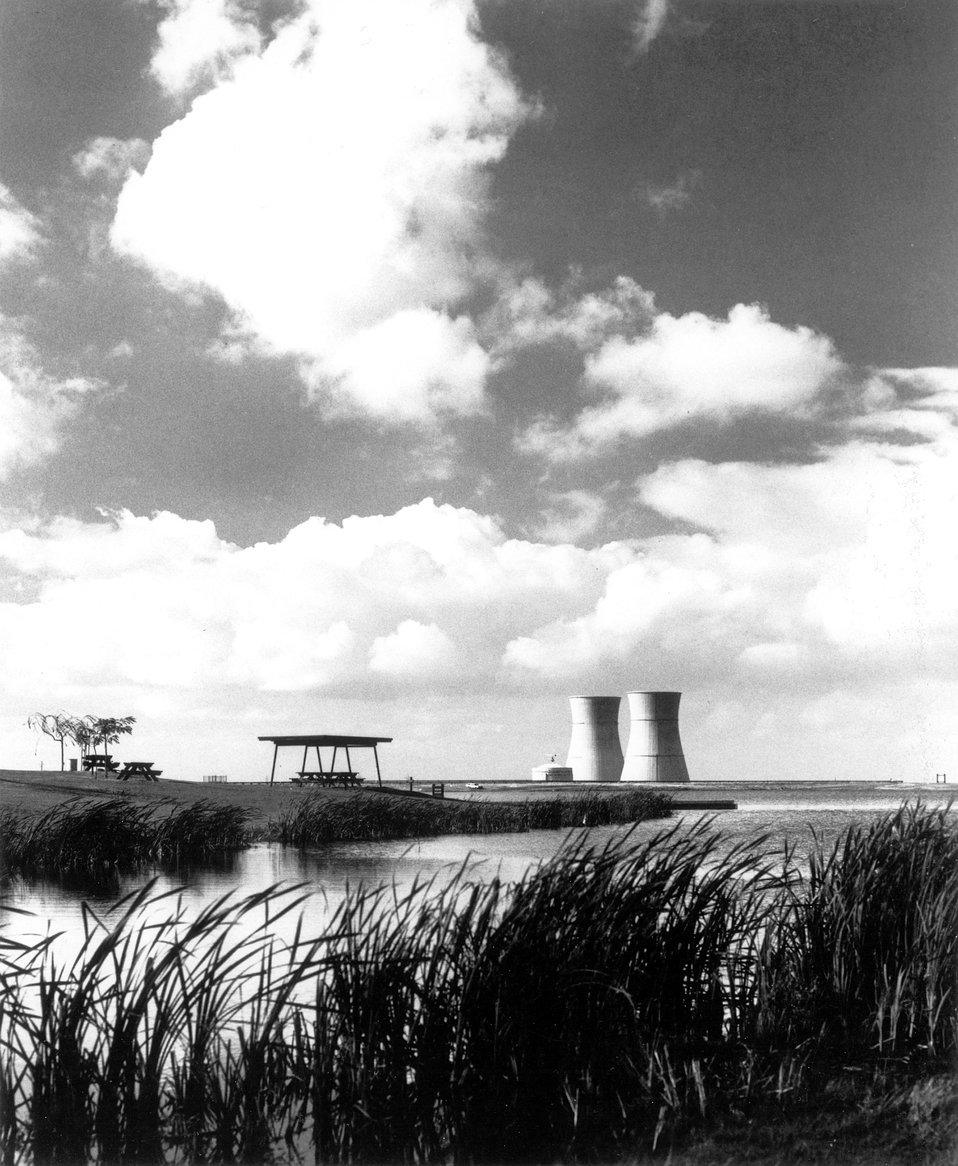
Looking in a westerly direction across Rancho Seco Lake at the Sacramento Utility District's Rancho Seco Nuclear Generating Station.